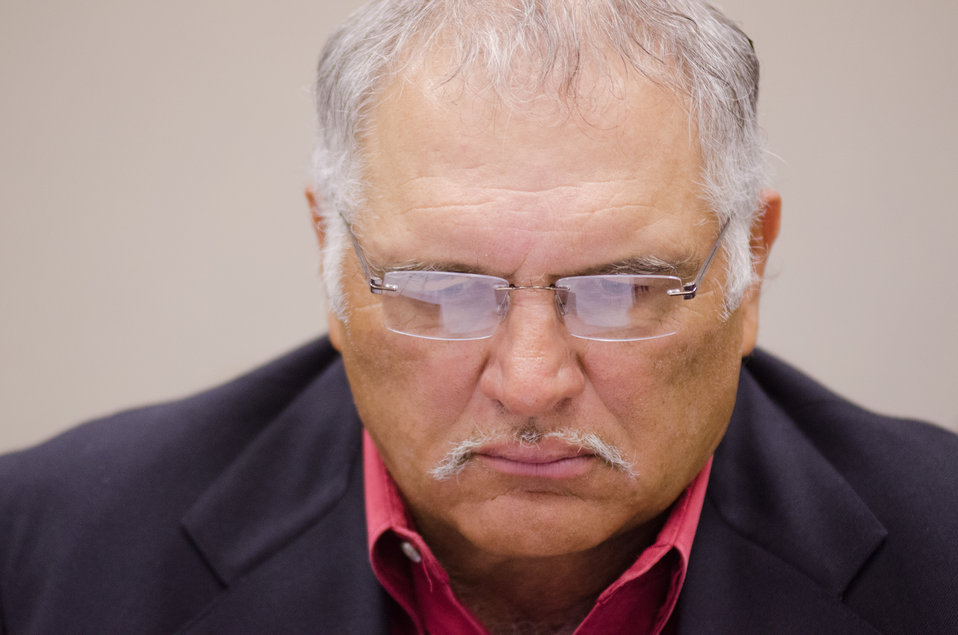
Natural Resources Director for the Blackfeet Nation, in Cut Bank, Mont., Gerald Lunak studies a draft of the bylaws during the first administrative/training meeting of the U.S. Department of Agriculture's (USDA) Council for Native American Farming and Ranching (CNAFR) held on Monday, Aug. 13, 2012 at the USDA headquarters Whitten Building, in Washington, D.C. CNAFR was created to advise the Secretary on ways to eliminate barriers to participation for Native American Farmers and Ranchers in USDA programs. The Council was established as part of the Keepseagle settlement, and is conducted under the oversight of USDA's Office of Tribal Relations, which is part of the Office of the Secretary of Agriculture. The Director of Tribal Relations Joanna Mounce Stancil serves as Designated Federal Official (DFO) for the Council.